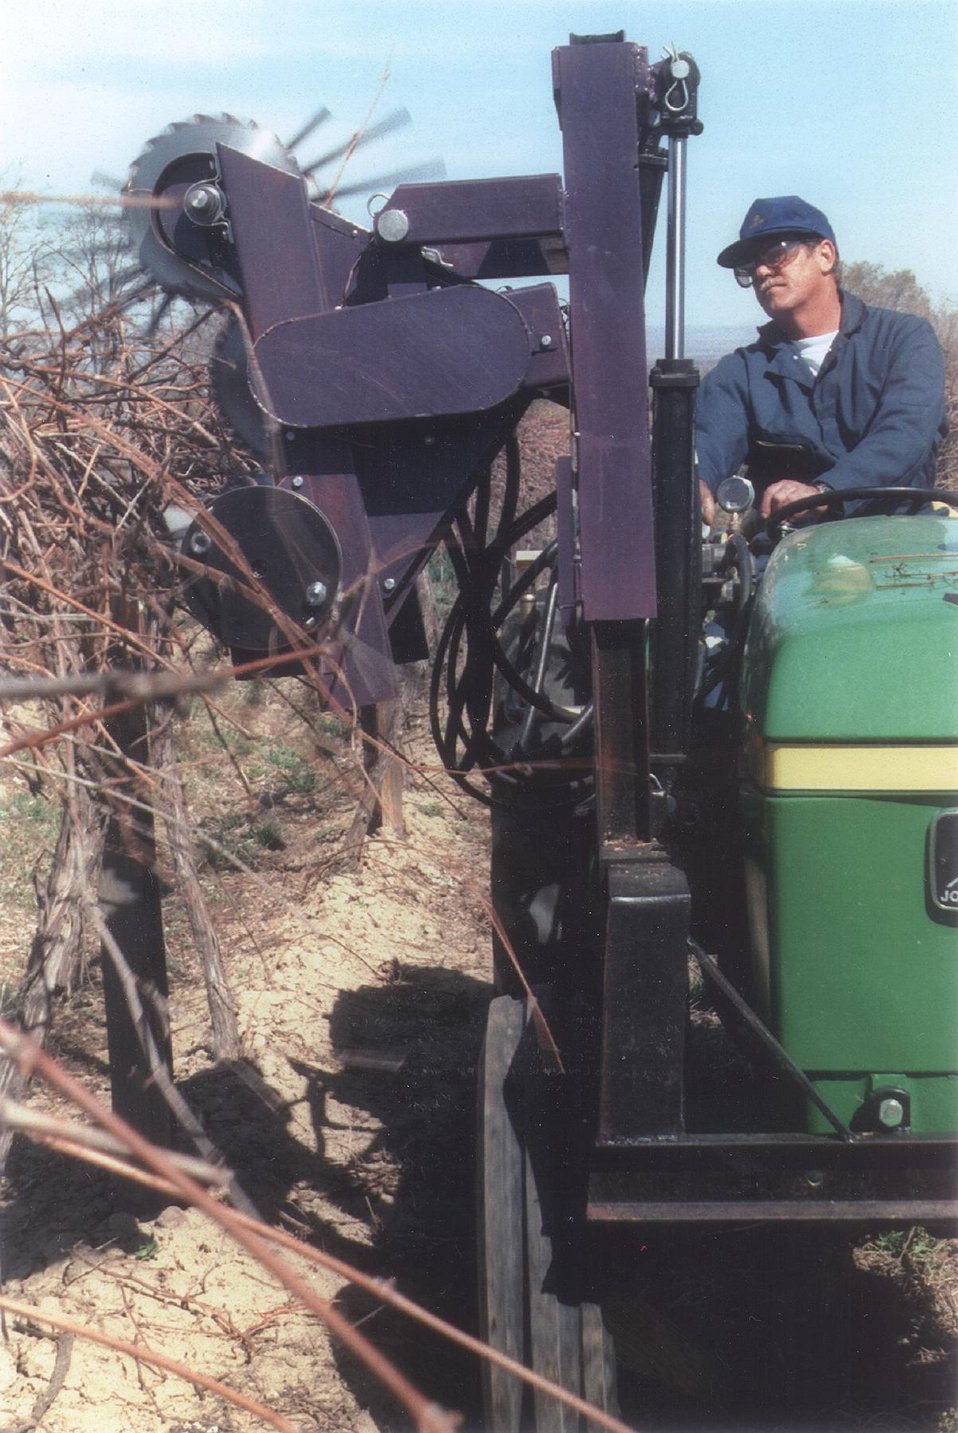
GRAPE PRUNER DEVELOPED AT PACIFIC NORTHWEST NATIONAL LABORATORY.

THIS GRAPE PRUNER, DEVELOPED BY A STAFF MEMBER AT PNNL, IS A PRODUCTIVE TOOL IN THE FIELD OF AGRICULTURE. IT ENABLES CONCORD GRAPE GROWERS TO PRUNE SEVERAL ACRES OF VINES IN A SINGLE DAY, THEREBY INCREASING GRAPE YIELD.